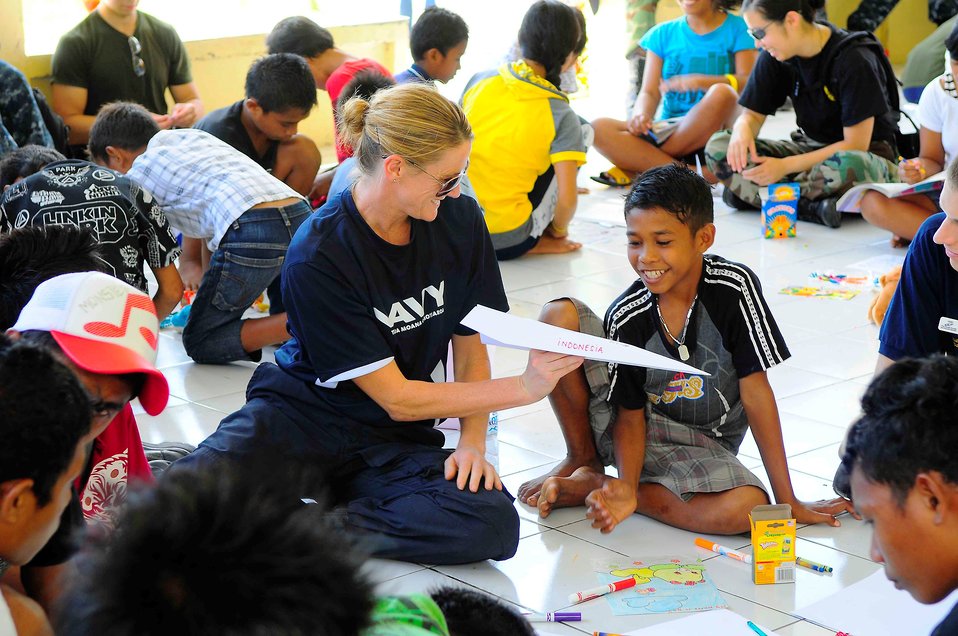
New Zealand Defence Force Lt. Cmdr. Kerry Climo Gives an Indonesian Boy a Paper Airplane

New Zealand Defence Force Lt. Cmdr. Kerry Climo, currently embarked aboard the Military Sealift Command hospital ship USNS Mercy (T-AH 19), gives a boy a paper airplane she made while spending time with children during a community service event at the Rumah Sejahtera Bagi Anak Orphanage, in support of Pacific Partnership 2010 in Tobelo, Indonesia, on July 14, 2010. Pacific Partnership 2010 is the fifth in a series of annual U.S. Pacific Fleet endeavors conducted in Indonesia as a disaster relief exercise to strengthen regional partnerships.